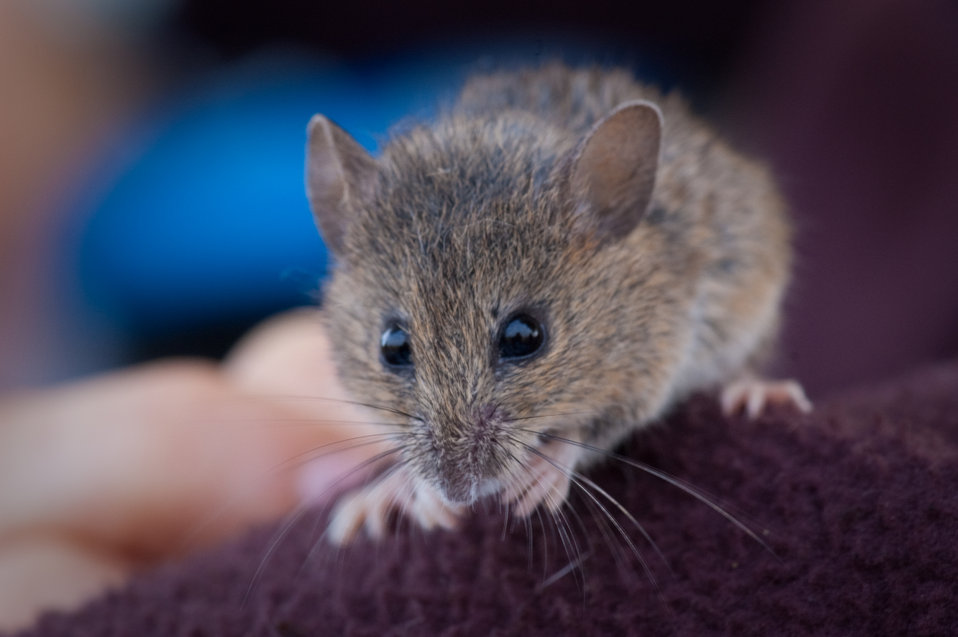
Salt marsh harvest mouse

Endangered Salt marsh harvest mice are critically dependent on dense cover and their preferred habitat is pickleweed found in tidal marshes.